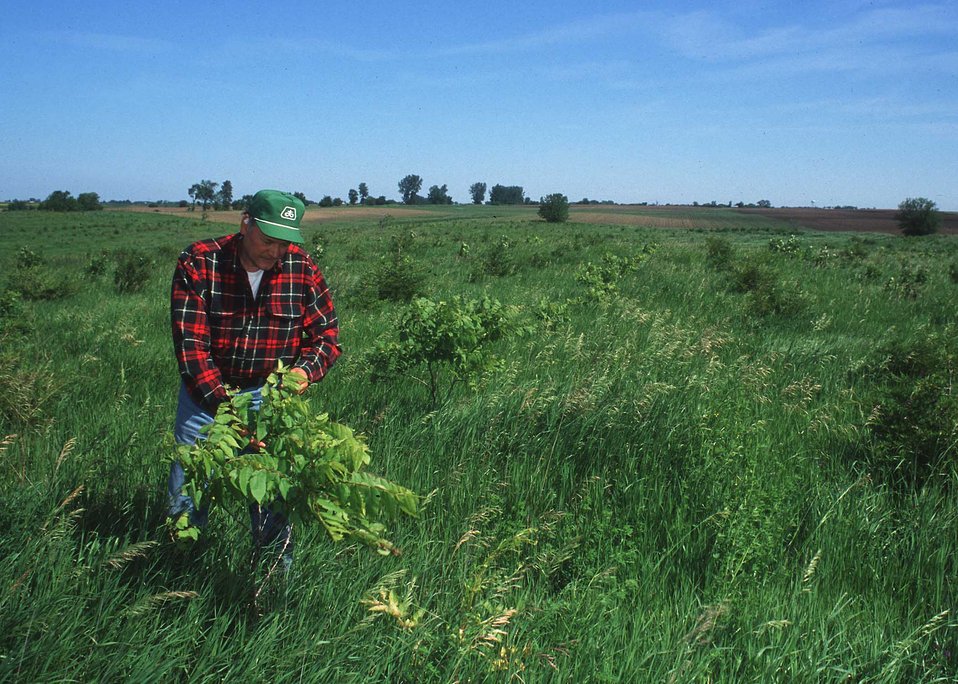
Tree and grass plantings in central Iowa for wildlife.